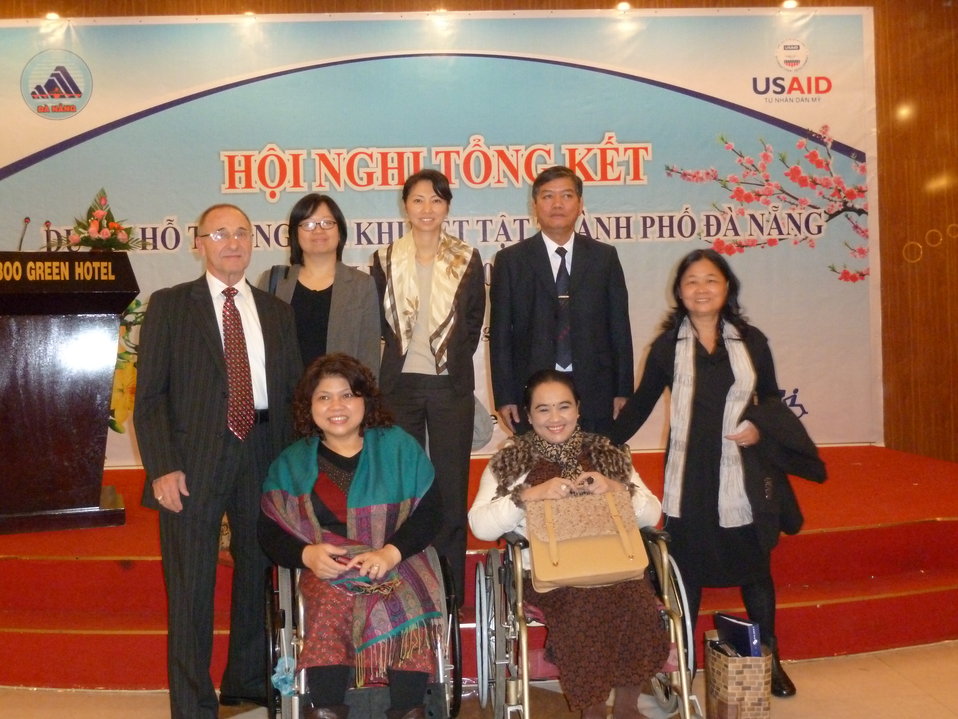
Danang Disability Workshop

Close out workshop of three-year USAID program in disabilities, Danang